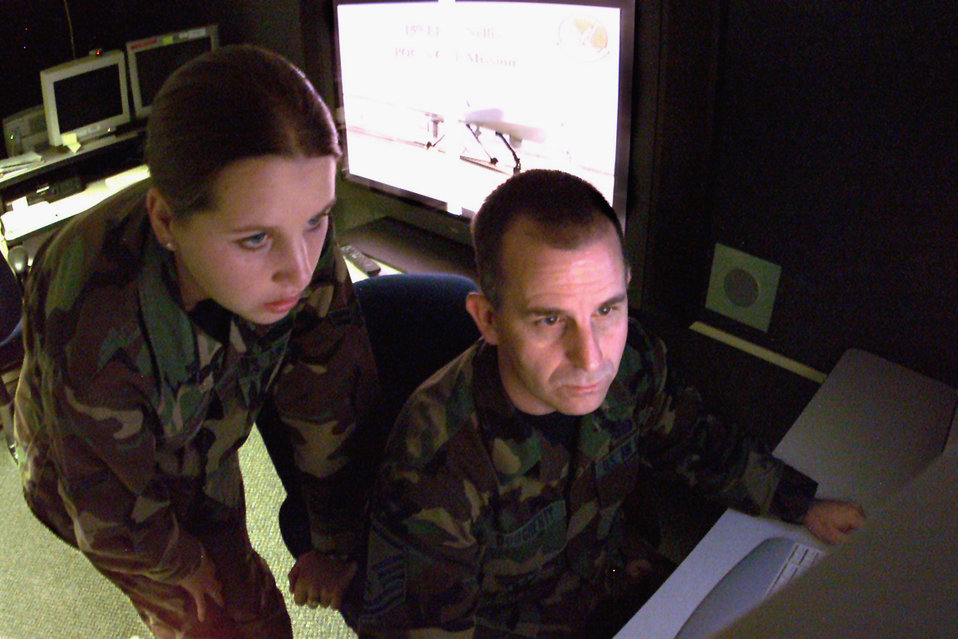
Reaching back to Langley

LANGLEY AIR FORCE BASE, Va. -- Airman 1st Class Jamie O'Connell, an imagery analyst in the 30th Intelligence Squadron here, consults with Master Sgt. William Dougherty, an imagery mission supervisor to interpret data from a Predator image feed. Dougherty is deployed from the Arkansas Air National Guard's 123rd IS. O'Connell and Dougherty are part of a team that provides intelligence, surveillance and reconnaissance feedback to deployed warfighting commanders.